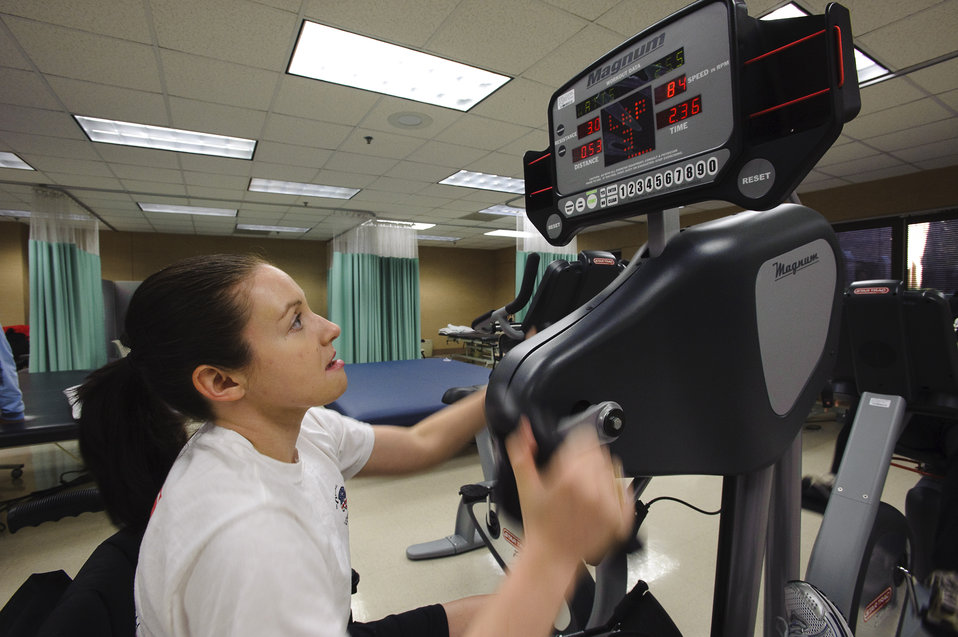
Captain, family reflect on blessings

Capt. Wendy Kosek completes six miles on an upper body ergometer for cardio training Nov. 5, 2009, at Brooke Army Medical Center at Fort Sam Houston, Texas. Captain Kosek is rehabilitating from injuries sustained in Iraq from a improvised explosive device that struck the convoy she was traveling in. Captain Kosek is a 19th Airlift Wing legal officer at Little Rock Air Force Base, Ark.